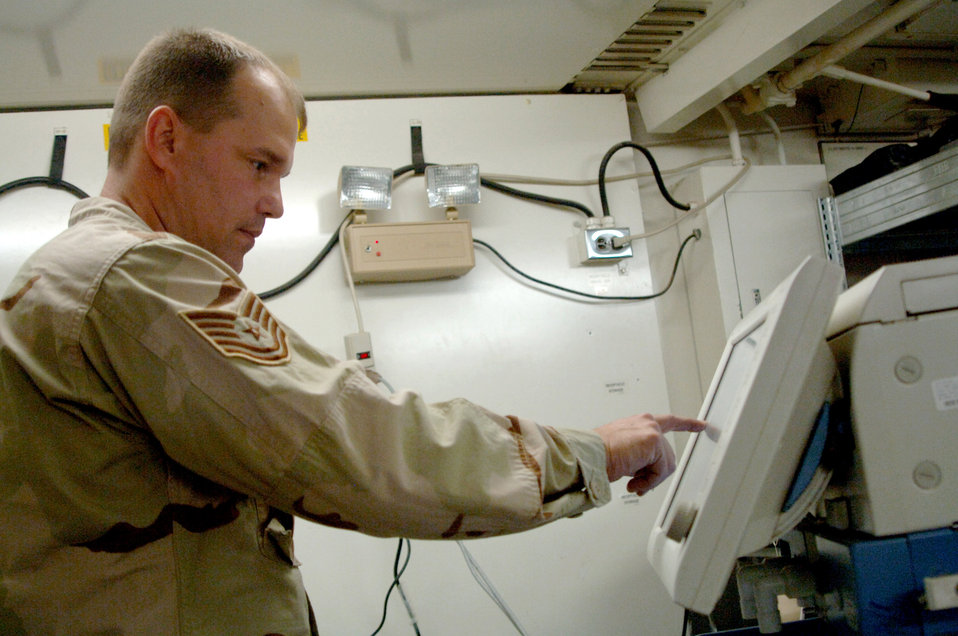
Single-parent dads deal positively with deployment

Tech. Sgt. Wayne Sinclair performs an operational inspection on a ventilator Feb. 21 in the biomedical equipment repair shop at Balad Air Base, Iraq. It can take Sergeant Sinclair a full duty day to monitor, inspect and follow the manufacturer's specifications guide on the ventilator. Sergeant Sinclair is assigned to the 332nd Expeditionary Medical Group and is deployed from the 56th Medical Support Squadron at Luke Air Force Base, Ariz.